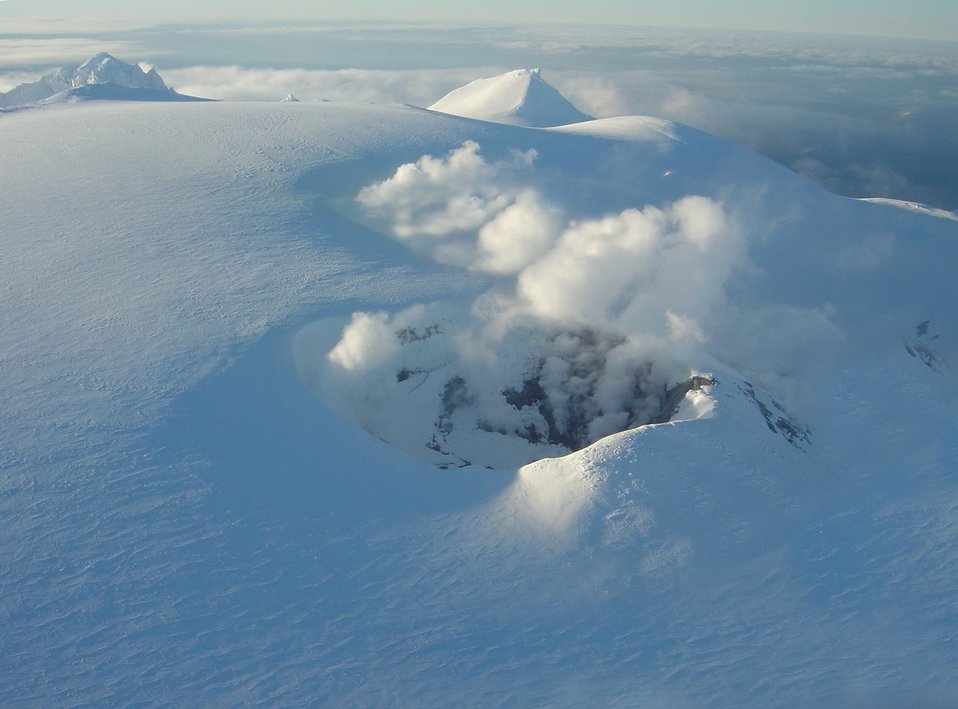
A snow-shrouded Makushin Volcano emits steam and volcanic gases melting away the snow in the caldera.